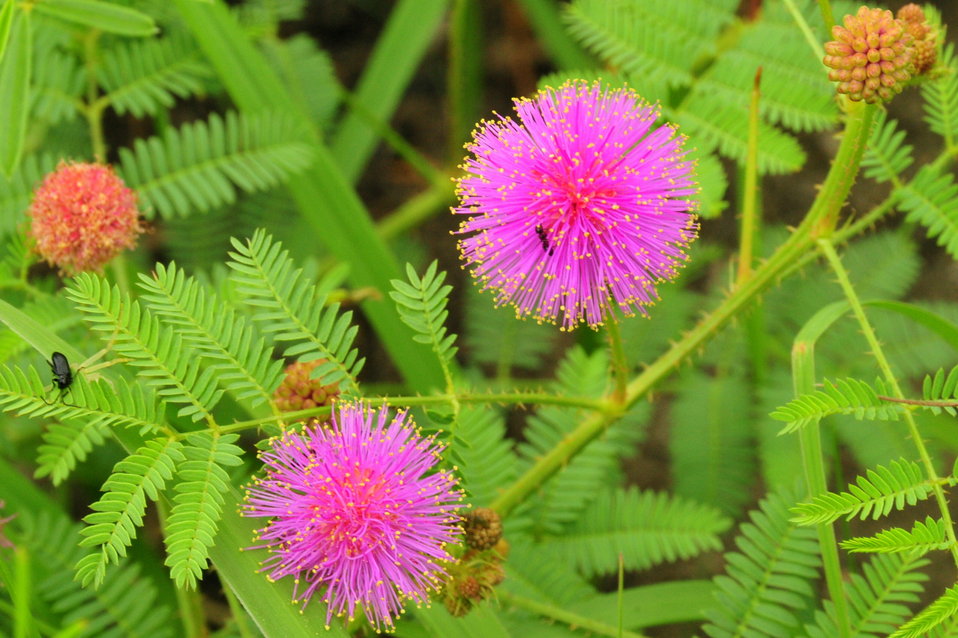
Catclaw sensitive briar (Mimosa nutallii) Lake Andes WMD. Catclaw sensitive briar is very nutritious for livestock, which will seek it out. It is an important indicator of range condition, decreasing when overgrazed.
The leaflets are sensitive to touch and will fold together when disturbed. The leaves also fold at night or on dark cloudy days. This unusual habit of folding leaves on windy and cloudy days and at night is believed to be a water conserving adaptation. It is found in native prairies in portions of South Dakota, Nebraska, and Kansas in Region 6.